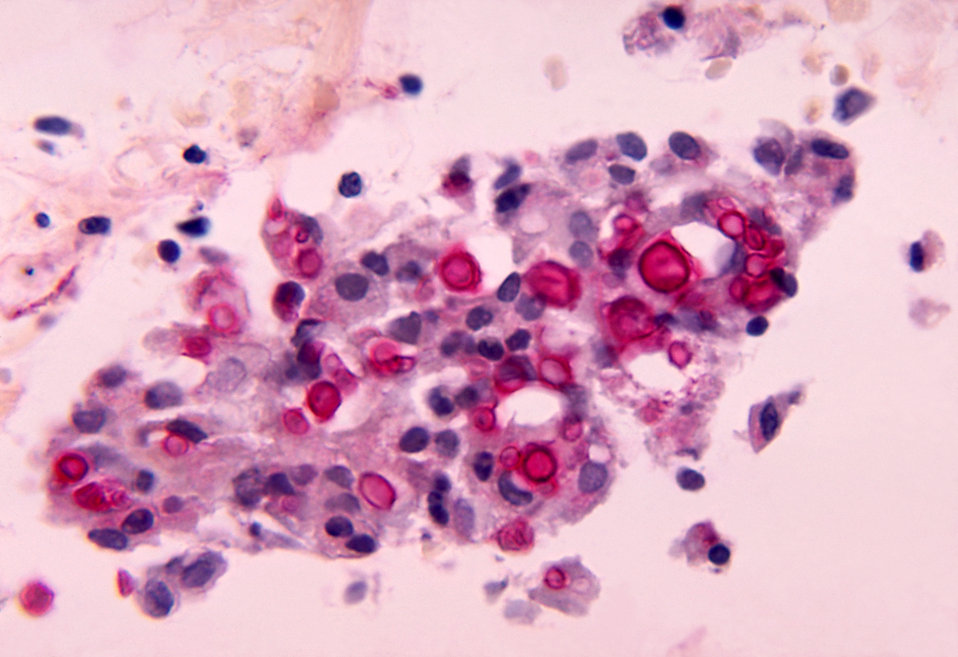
This micrograph depicts the histopathologic changes associated with cryptococcosis of the lung using Mucicarmine stain.